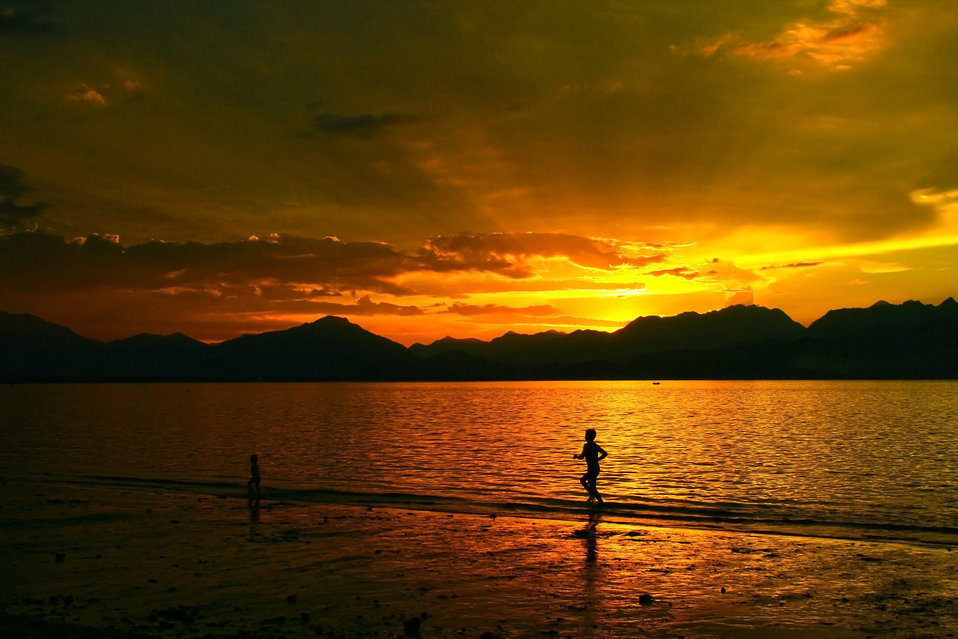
Father and son

Sunset on the bay of danang, central vietnam..